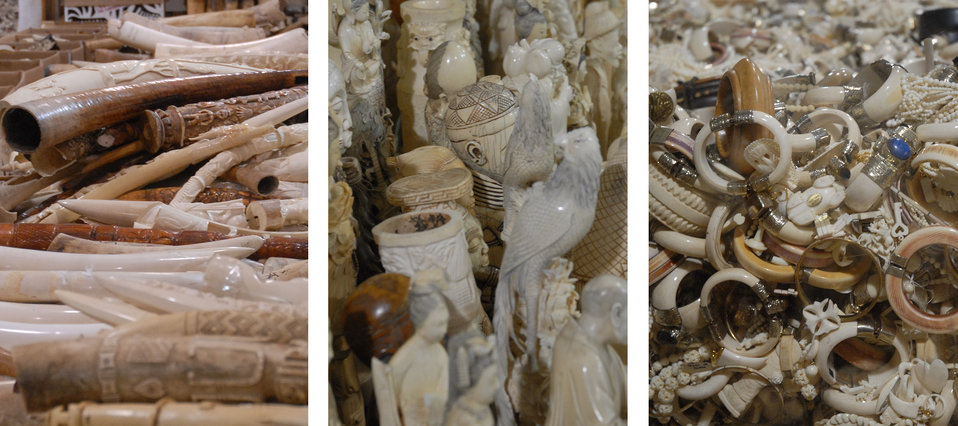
Ivory Crush